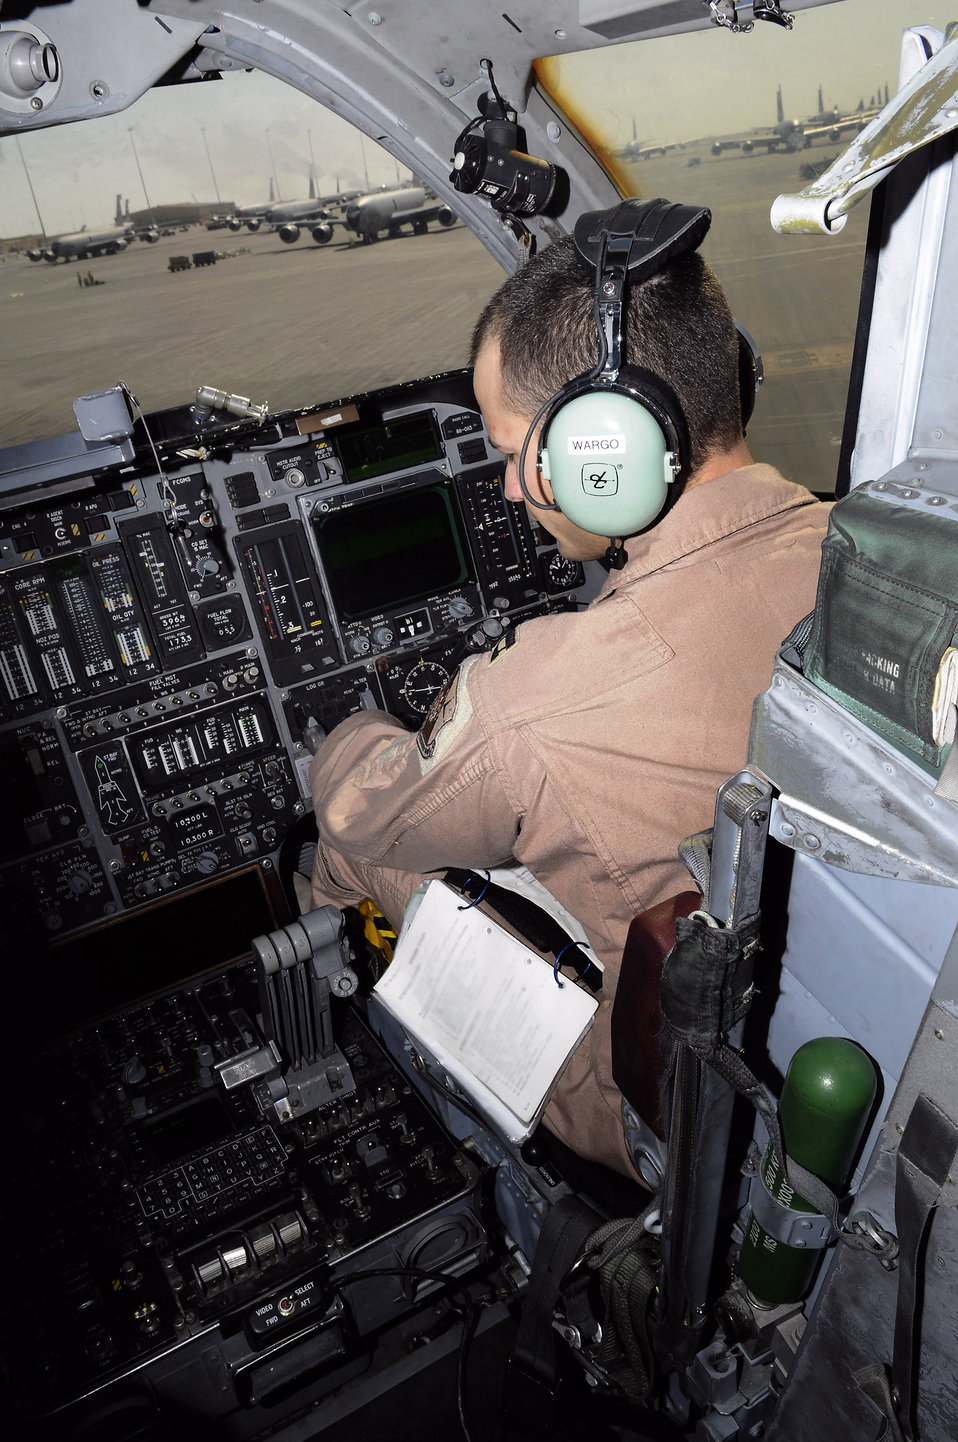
B-1B aircrews bring unique capabilities to the fight

Capt. Aaron Wargo works his way through preflight checklists from the co-pilot seat in the cockpit of a B-1B Lancer Dec. 9 at an air base in Southwest Asia. A preflight crew prepares the aircraft for flight in order to allow the crew actually flying to maximize their available flight time. Captain Wargo hails from Garden Grove, Calif., and is deployed from Ellsworth Air Force Base, S.D. He is a pilot assigned to the 379th Expeditionary Bomb Squadron.